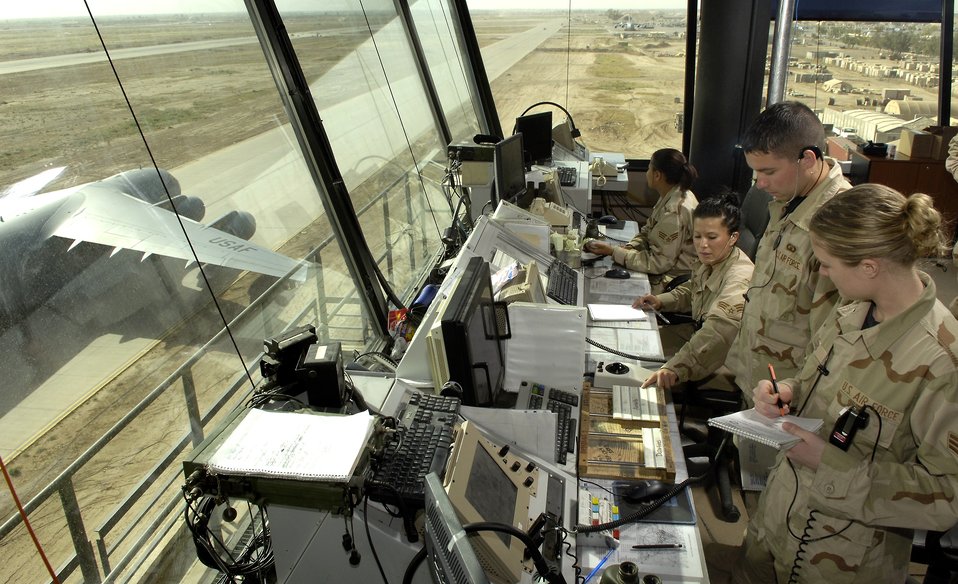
Balad remains one busy airfield

Senior Airman Cortney Goes (front to rear), Staff Sgt. Pete Solzano, Senior Airman Sherrilyn Ceja and Senior Airman Nicole Lundie control aircraft flying into and out of Balad Air Base, Iraq, the busiest single-runway airfield in the Department of Defense. A C-17 Globemaster III from McCord Air Force Base, Wash, taxis past the control tower on May 15, 2006. Controllers monitor more than 200,000 square miles of air space over Iraq. The four Airmen are air traffic controllers with the 332nd Expeditionary Operation Support Squadron.